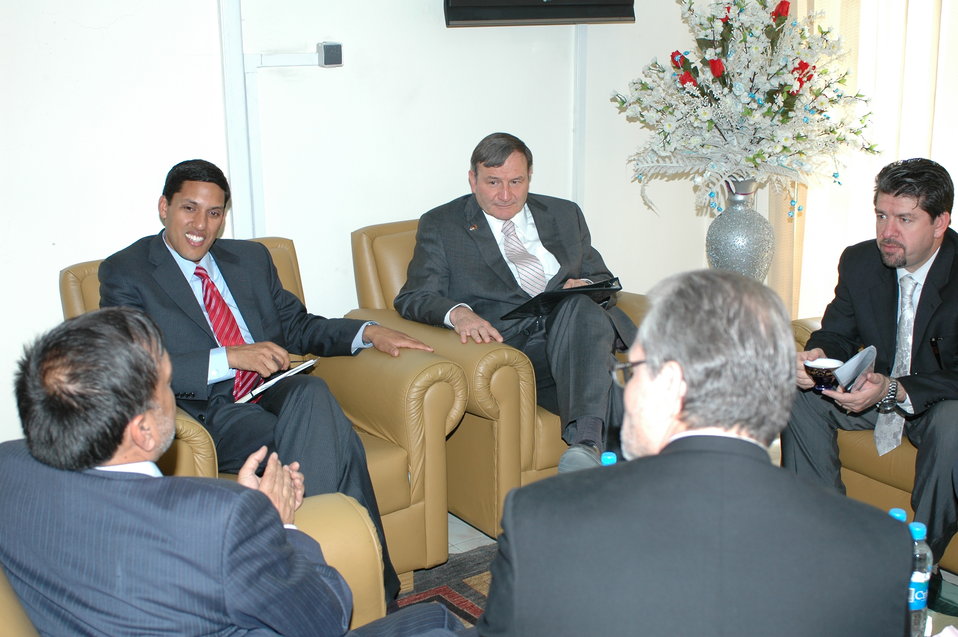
DDP MOU Preparation